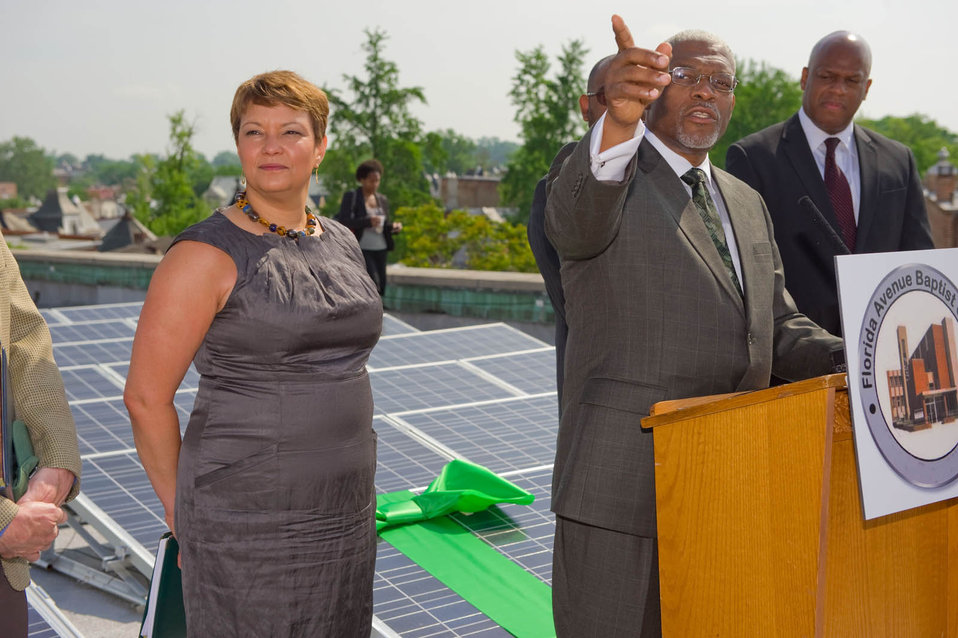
2011-05-03 FlaAveSolar 007